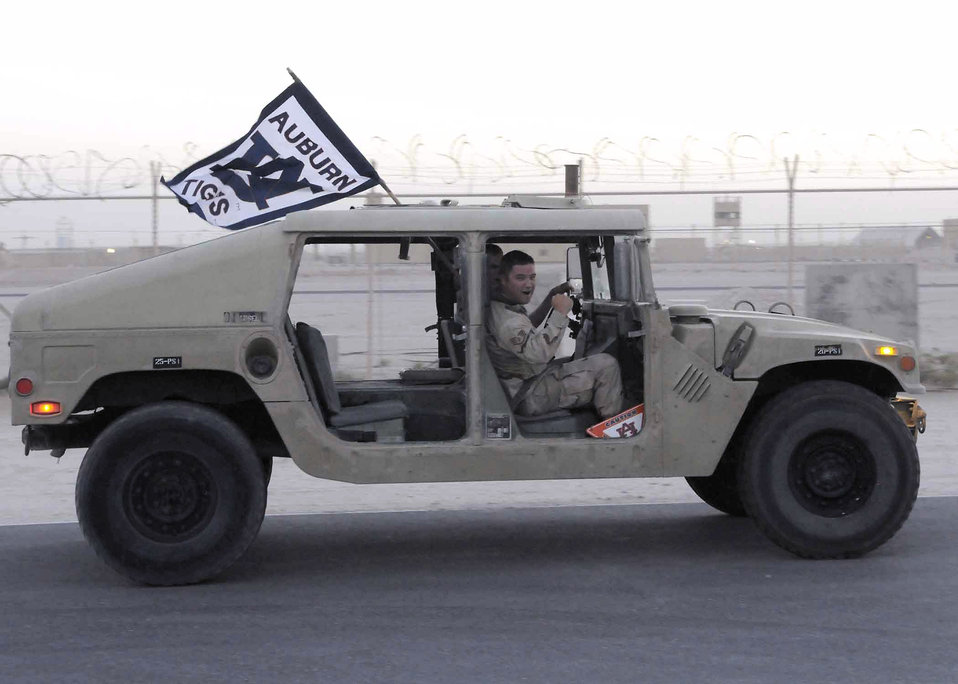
NCAA coaches 'touchdown' in AOR

Staff Sgt. Noah Mckenzie shows his support for the Auburn University Tigers during the NCAA coaches tour here May 22. Sergeant Mckenzie is assigned to the 379th Expeditionary Civil Engineer Squadron readiness as an emergency management technician. He is from Daphne, Ala., deployed here from Patrick Air Force Base, Fla.